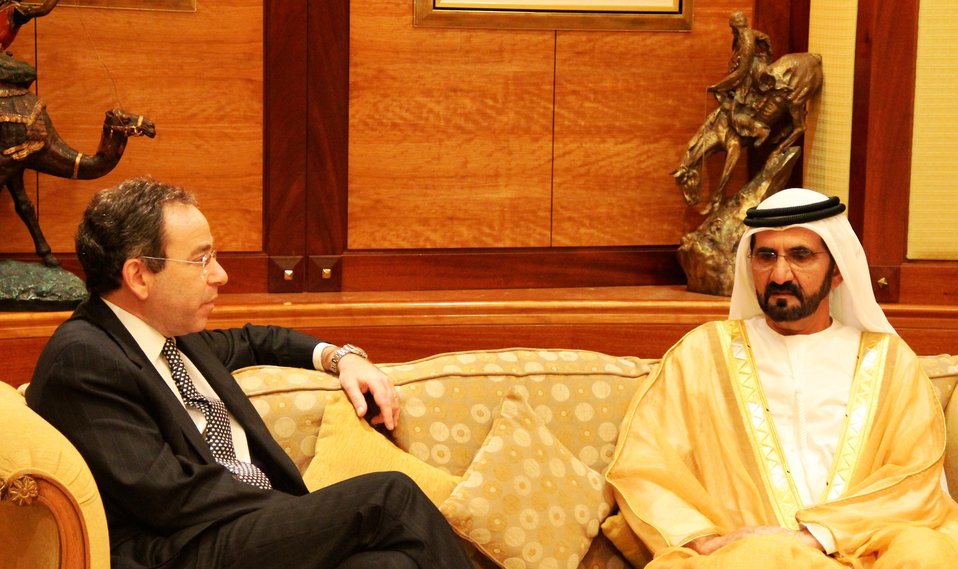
Deputy Secretary Nides Meets With the Ruler of Dubai

Deputy Secretary of State Thomas Nides meets with the Ruler of Dubai, Sheikh Mohammed bin Rashid Al Maktoum, during the Global Entrepreneurship Summit (GES) in Dubai, United Arab Emirates, December 12, 2012.